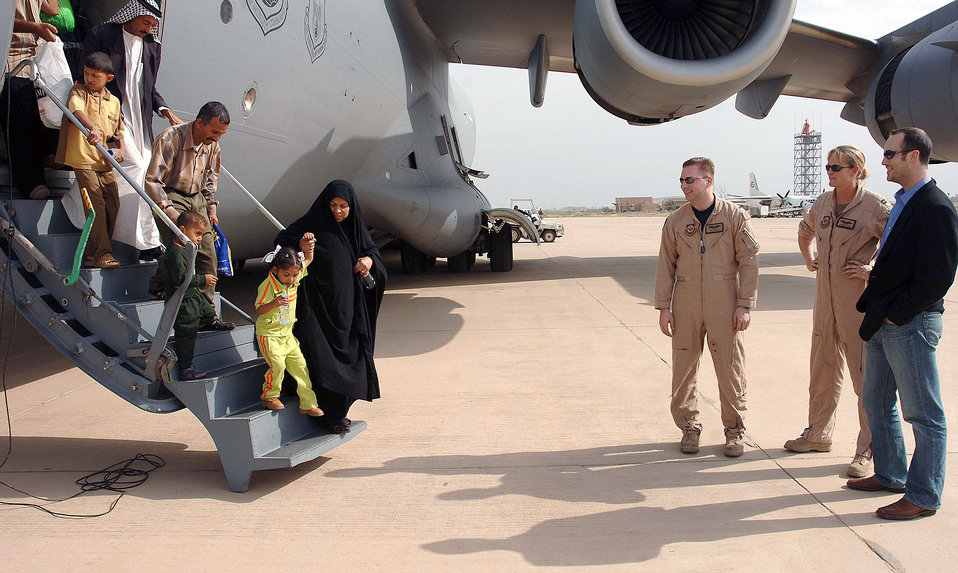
Operation Smile

Iraqi children and their escorts leave an Air Force C-17 Globemaster III at Baghdad International Airport, Iraq, on Saturday, April 29, 2006, as Chris Anderson of Operation Smile and two crewmembers watch. Operation Smile provides corrective surgery for cleft palates and cleft lips. The program provided surgery in Amman, Jordan, to more than 100 Iraqi children. They were flown back to Iraq on the C-17. Mr. Anderson is an Operation Smile staff member based in the Middle East.